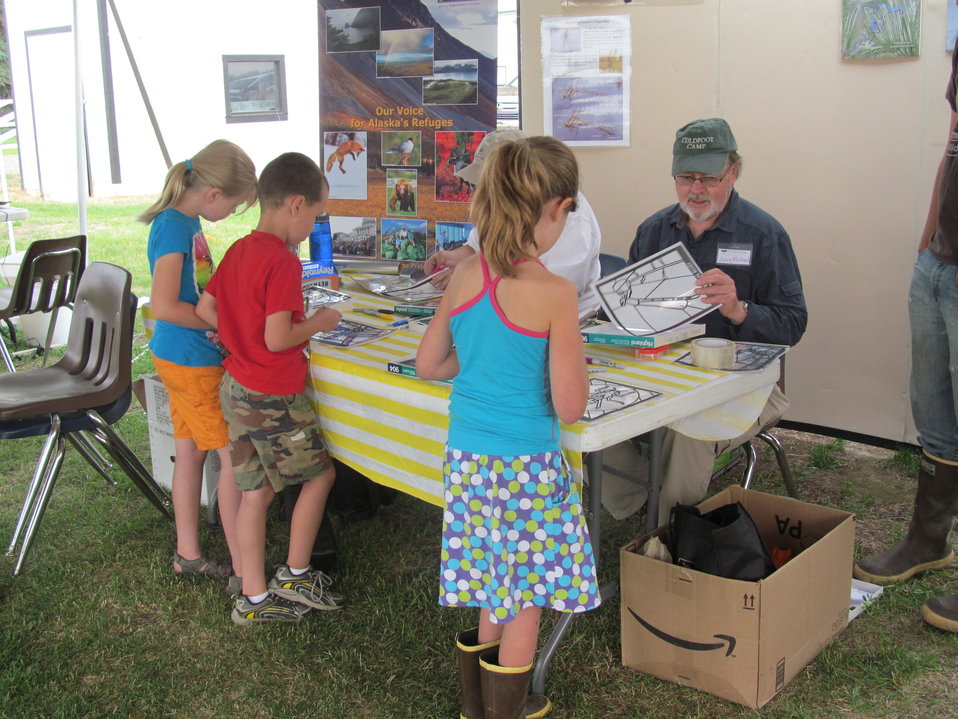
Friends of Alaska NWR booth

(USFWS)